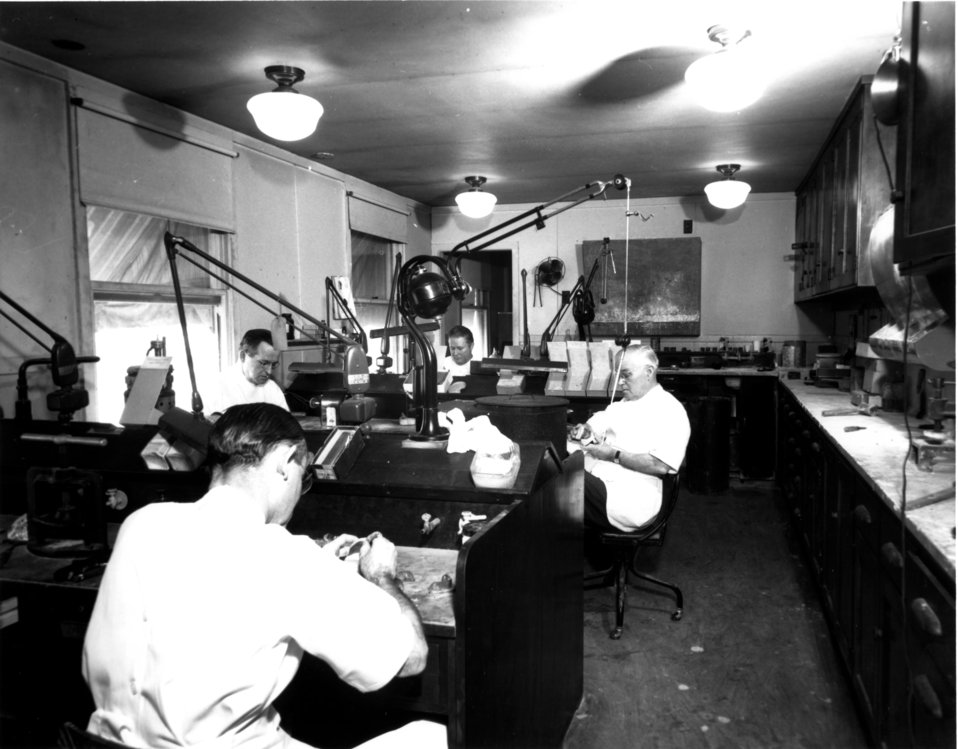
Medical at Oak Ridge